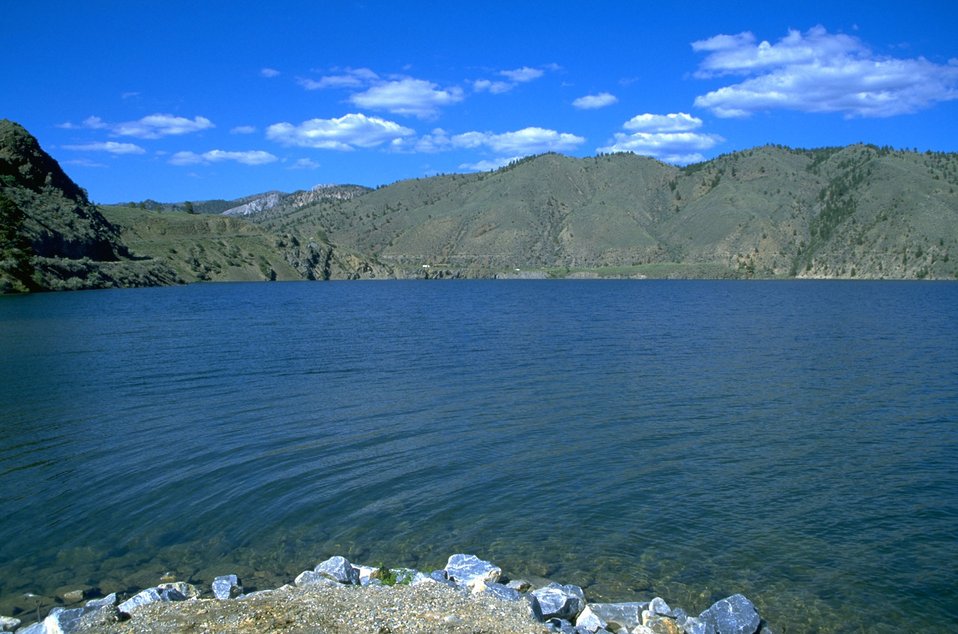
Hauser Lake